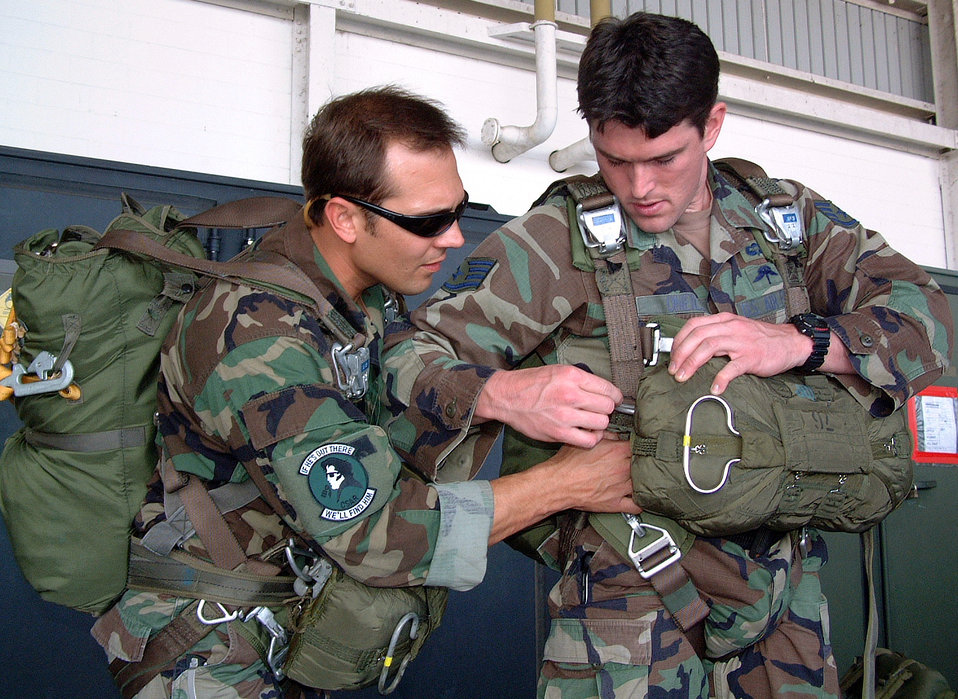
U.S. forces return to Philippines

CLARK AIR BASE, Philippines -- Staff Sgt. Nick (left) checks the parachute of Staff Sgt. Liam in a hangar at Clark Air Base, Philippines here Jan. 28. Nick is a pararescueman and Liam is a combat controller. Both are assigned to the 320th Special Tactics Squadron at Kadena Air Base, Japan. The squadron is in the Philippines for a monthlong joint combined exchange training program.